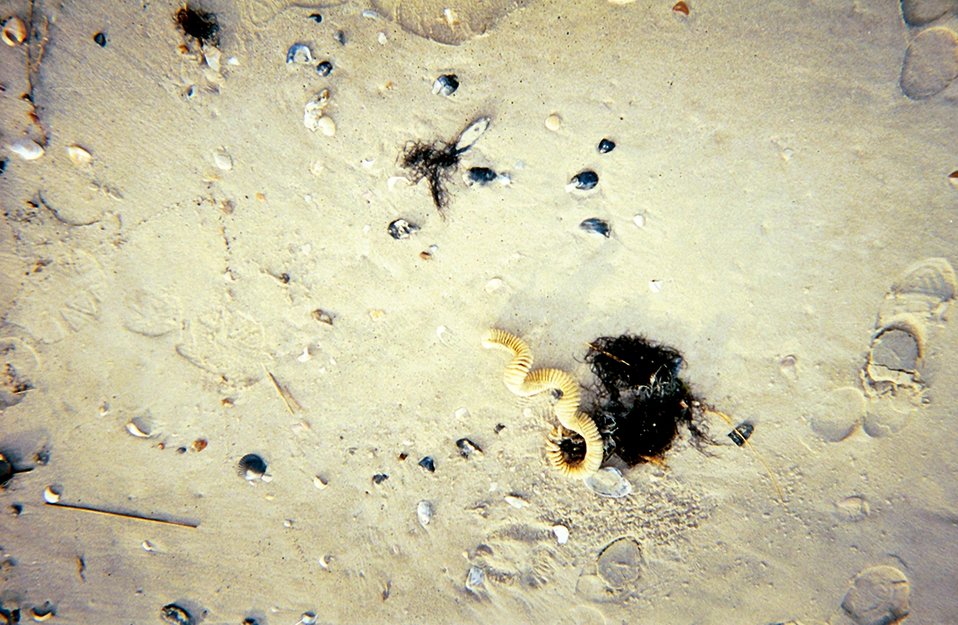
A whelk egg case, algae, and broken shells.